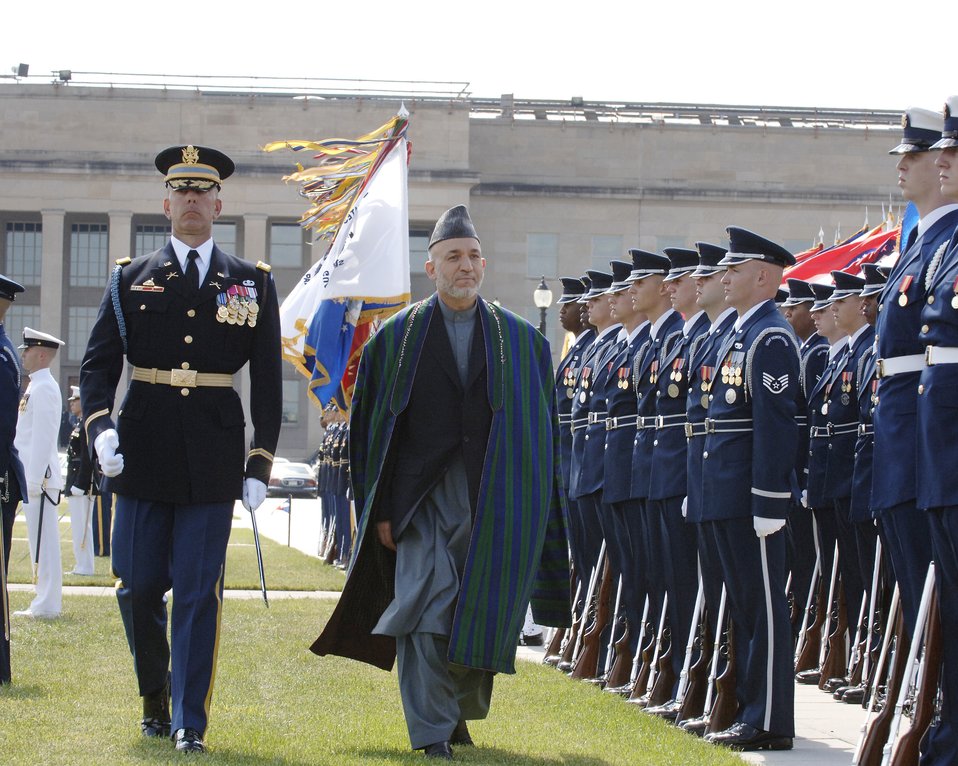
A special visit

U.S. Army Col. Robert Pricone escorts Afghan President Hamid Karzai during a special ceremony at the Pentagon Sept. 25. Secretary of Defense Donald Rumsfeld and Hamid Karzai met to discuss regional security issues. Colonel Pricone is commander, 3rd U.S. Infantry Regiment, The Old Guard.